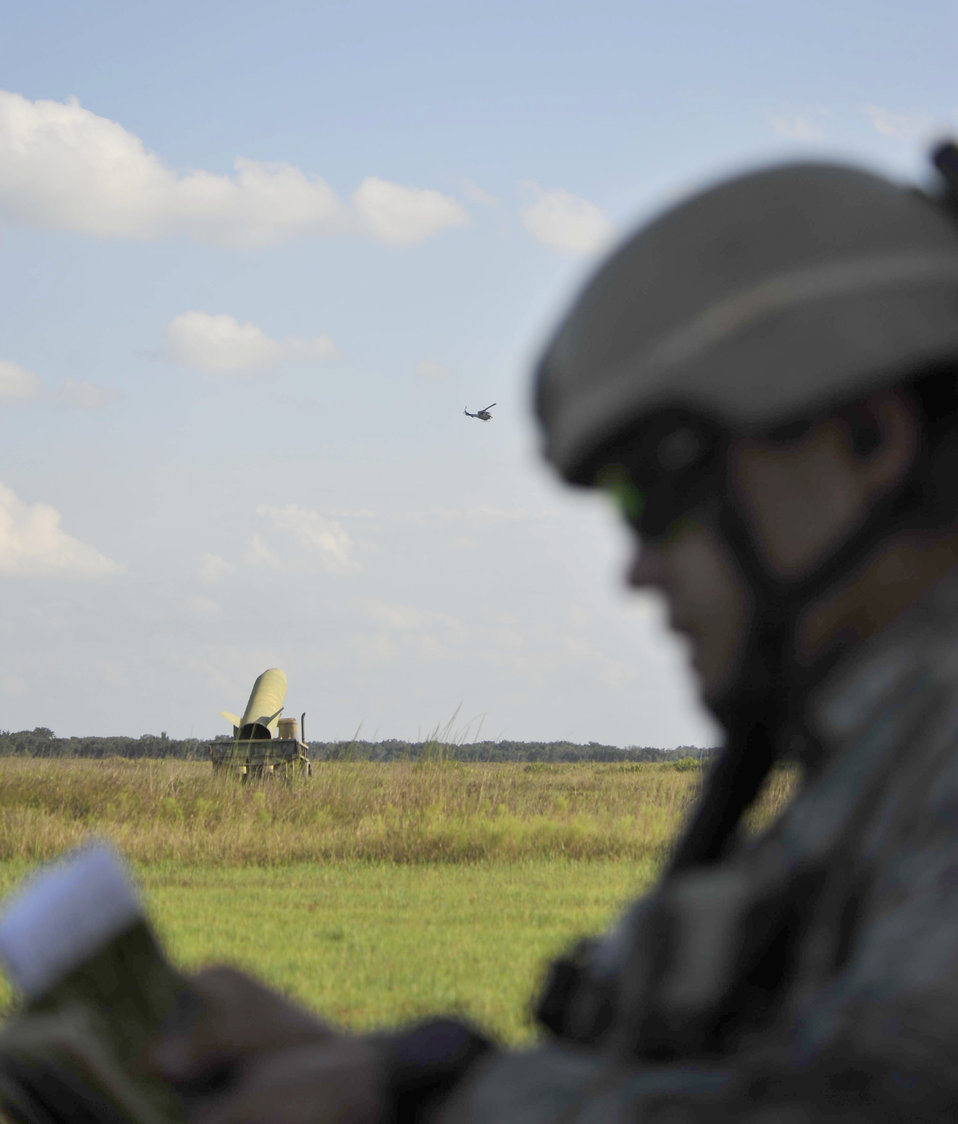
Atlantic Strike

Tech. Sgt. Tony Hall calls in close-air support to eliminate targets Sept. 14, 2010, as part of Atlantic Strike 10-02 in Avon Park, Fla. Atlantic Strike is a biannual Air Combat Command-sponsored joint training exercise designed for the tactical employment of air power in support of joint terminal attack controller and joint fires observer integration through close-air support.